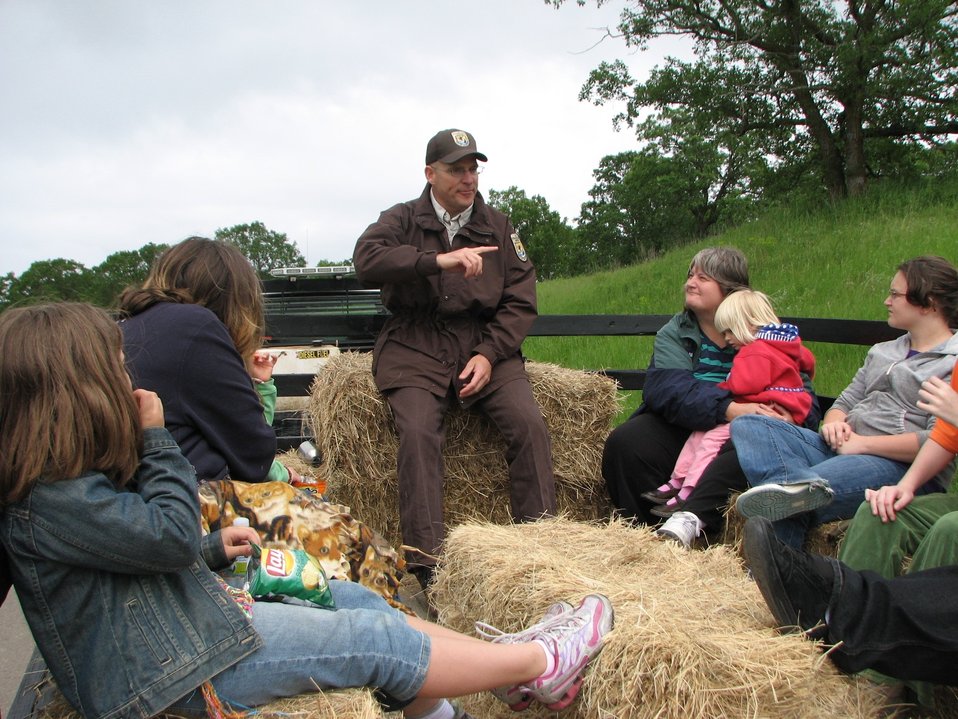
Hay Ride

Paul Halko of the Devils Lake Wetland Management District guides a hayride tour during the 2010 Sullys Hill Birding and Nature Festival.